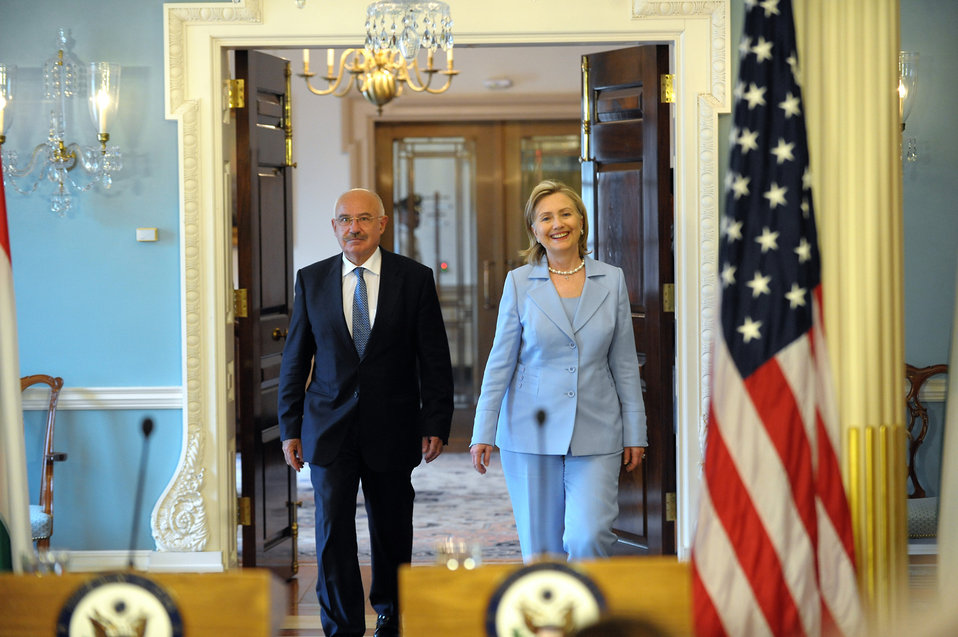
Secretary Clinton Holds Bilateral With Hungarian Foreign Minister Martonyi

U.S. Secretary of State Hillary Rodham Clinton holds a bilateral meeting with Hungarian Foreign Minister Janos Martonyi at the U.S. Department of State in Washington, D.C., on June 24, 2010.